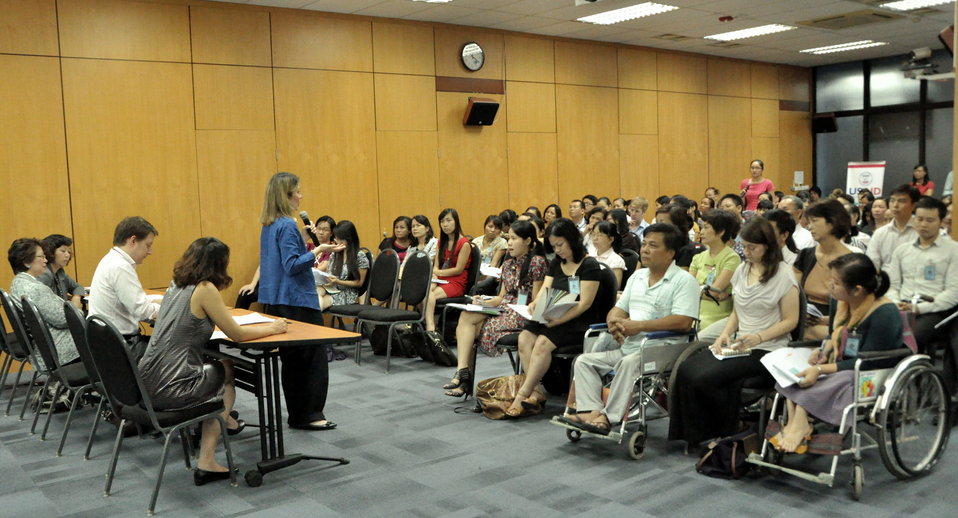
Development Grants Program Workshop in Hanoi

July 24, 2013